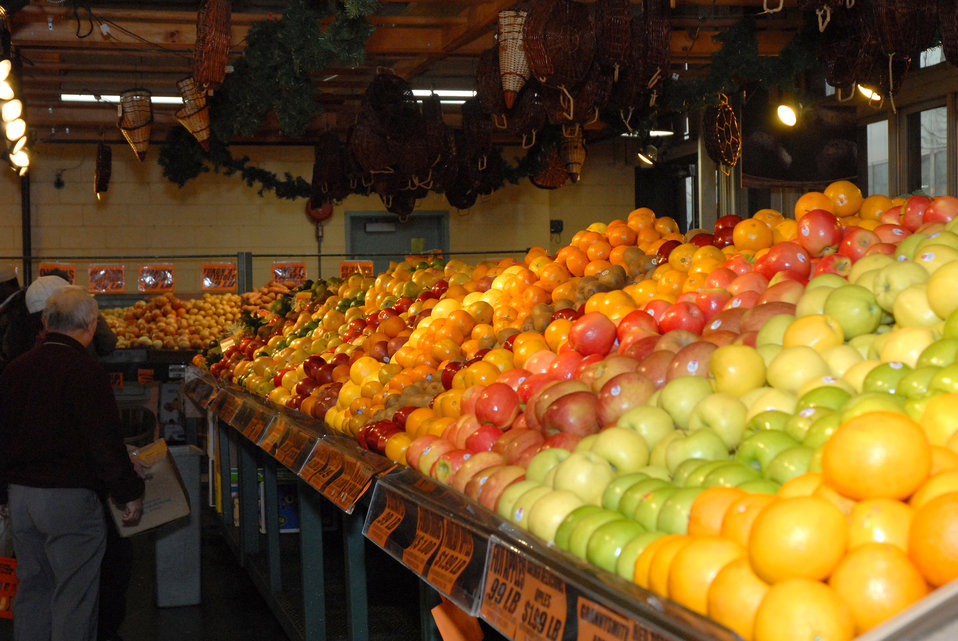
The Reading Terminal Market offers produce fresh from the field to the people of Philadelphia, Pennsylvania on March 26, 2007. There are Amish specialties, fruits, vegetables, meats, seafood, and poultry. Reading Terminal Market opened for business in 1892 with approximately 78,000 square feet and almost 800 spaces for vendors. The Market was revitalized in the 1990’s and today is still the gastronomic bazaar that its original planners had envisioned. Many of the historic Market stands survived the reconstruction and are once again filled with local produce, fresh eggs, milk, meats, poultry, seafood, handmade crafts, jewelry, and clothing. The Market is home to more than 80 merchants, two of whom are descendants of the original stand holders from a century before.